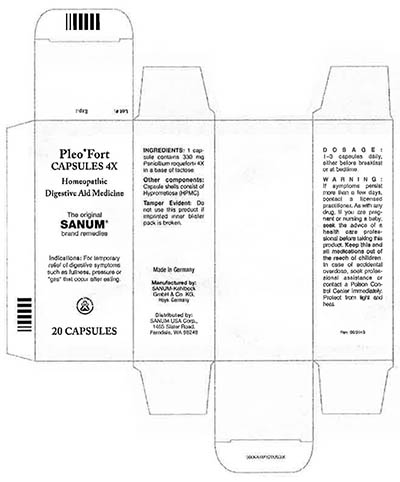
RECALLED – Homeopathic Drug Products

March 18, 2014 – Product Recall – Terra-Medica Issues Voluntary Nationwide Recall of Specified Lots of Pleo Homeopathic Drug Products Due to the Potential for Undeclared Penicillin.